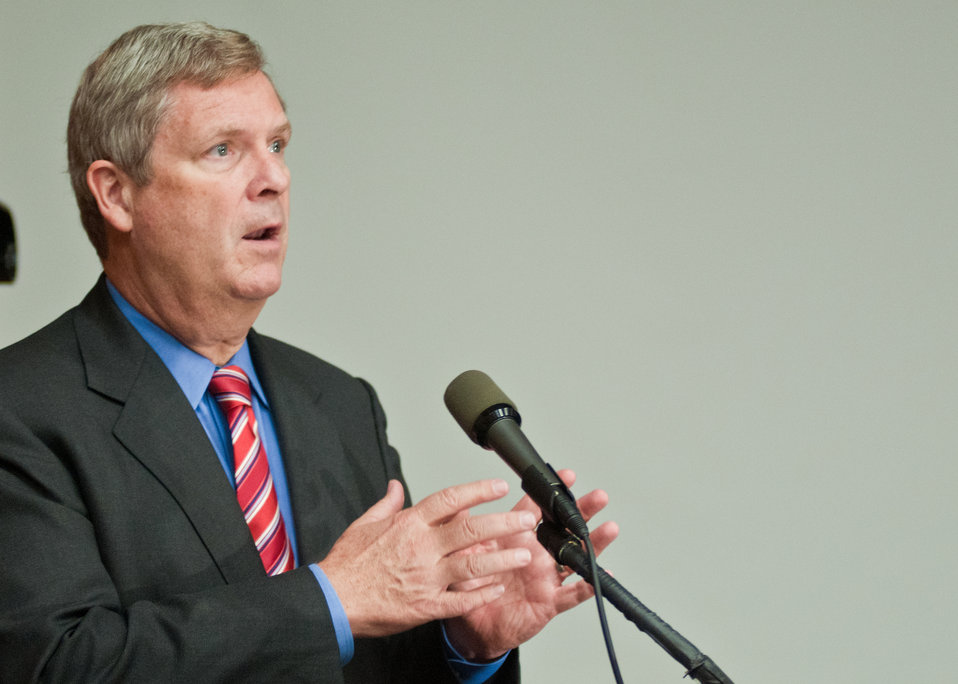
Agriculture Secretary Tom Vilsack spoke to the National Farmer’s Union on the economy of American agriculture during their annual Fall Legislative Fly-In at the U.S. Department of Agriculture in Washington, D. C. on Monday, Sept. 12, 2011.